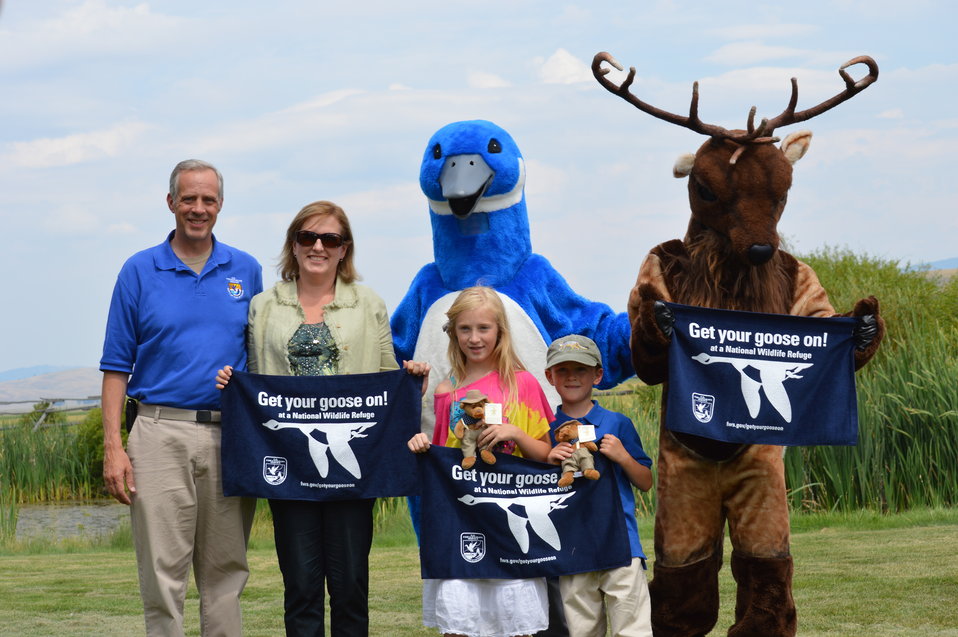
Get Your Goose On! - National Elk Refuge Style

On August 10, 2012 the U.S. Fish and Wildlife Service and Partners celebrated the 100 year anniversary of the establishment of the National Elk Refuge. In these photos, young attendees, along with Puddles the Blue Goose and the National Elk Refuge's mascot, showed us how to Get Your Goose On! with style.